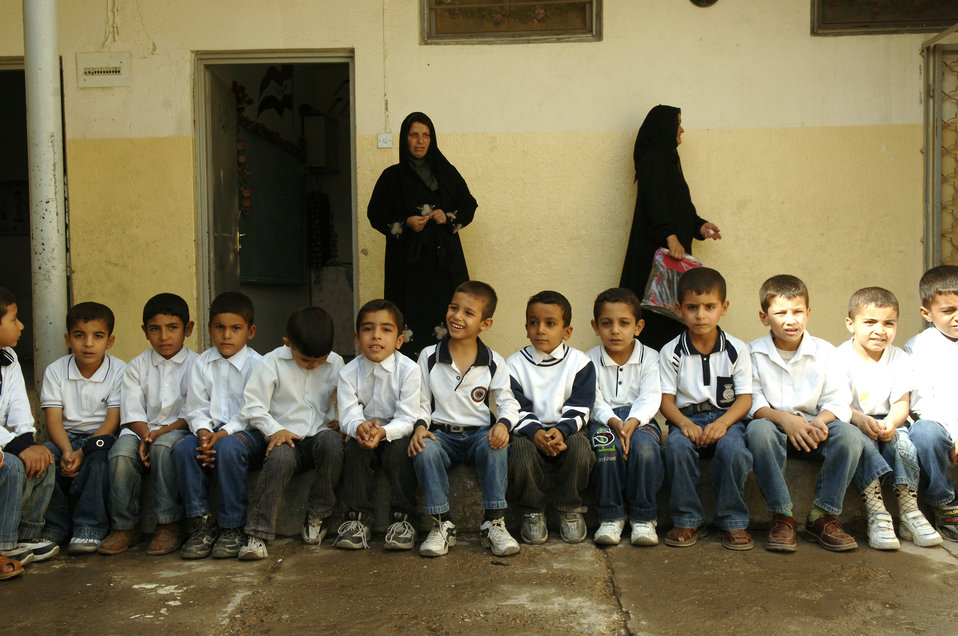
Iraqi students receive school supplies

Young Iraqi students wait patiently before being given school supplies at a primary school in the Bayaa District of Baghdad, Iraq, Oct. 31.